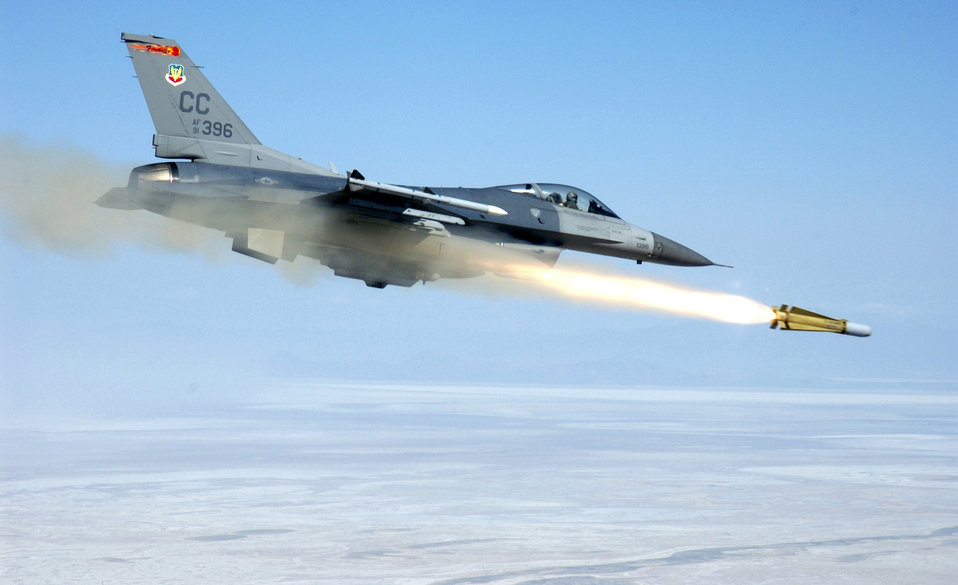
On target

OVER UTAH -- An F-16C Fighting Falcon assigned to the 522nd Fighter Squadron at Cannon Air Force Base, N.M., fires an AGM-65H Maverick air-to-ground missile at a target located over the Utah Test and Training Range. The mission was part of an air-to-ground weapons system evaluation program mission commonly referred to as Combat Hammer. The squadron is deployed to Hill AFB, Utah.